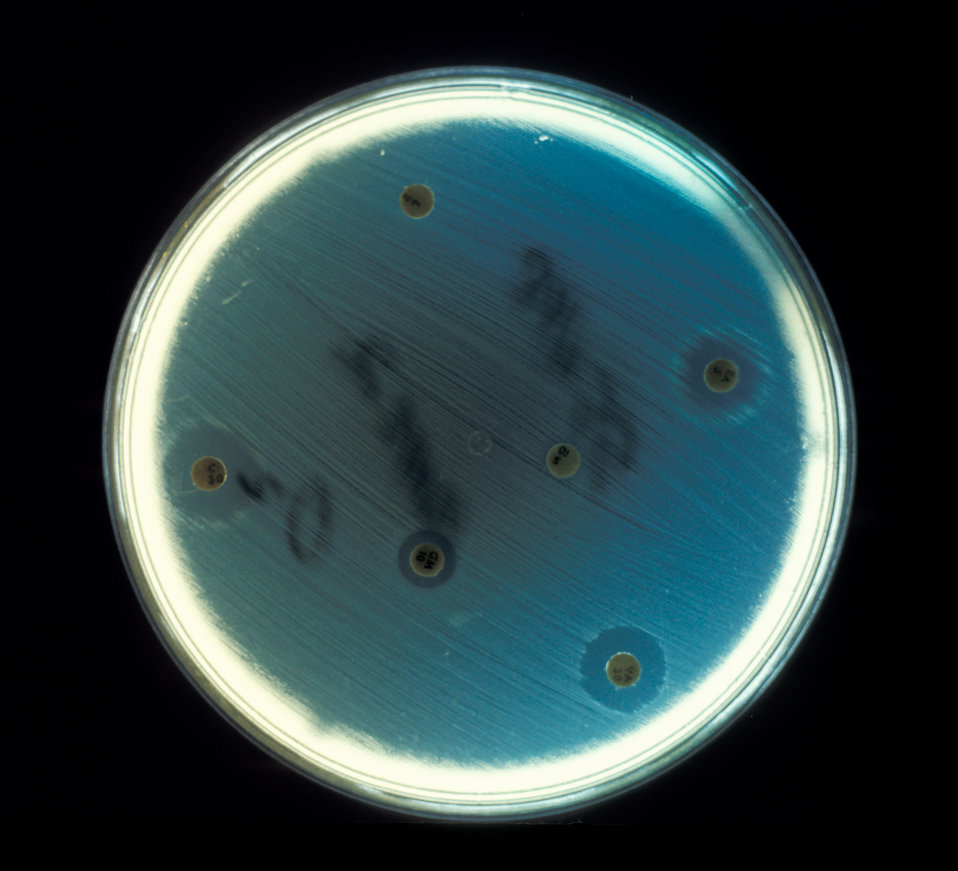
Enterococcus faecalis is shown cultured on an agar plate being tested for drug sensitivity in an anaerobic environment.